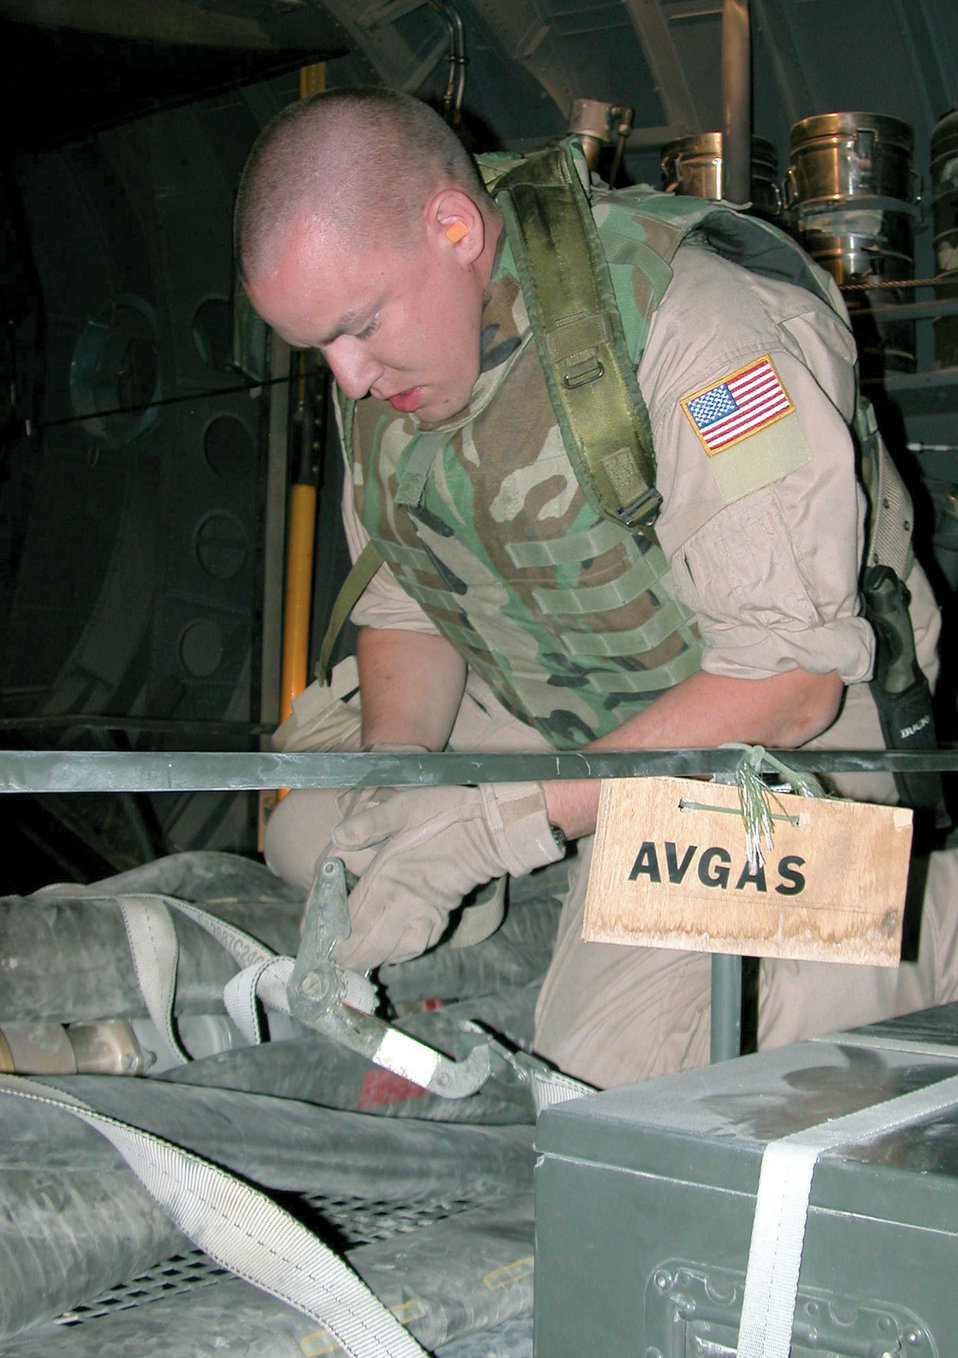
POL Airmen help turn C-130 into flying gas station

SOUTHWEST ASIA -- Staff Sgt. Chris Cooper releases the straps holding a 3-inch refueling hose to its rack. He is part of a four-person team that flies missions with the aerial bulk fuel delivery system. The system turns cargo aircraft into mobile gas stations, capable of delivering fuel to any location in the area of responsibility. Sergeant Cooper is from Elmendorf Air Force Base, Alaska.